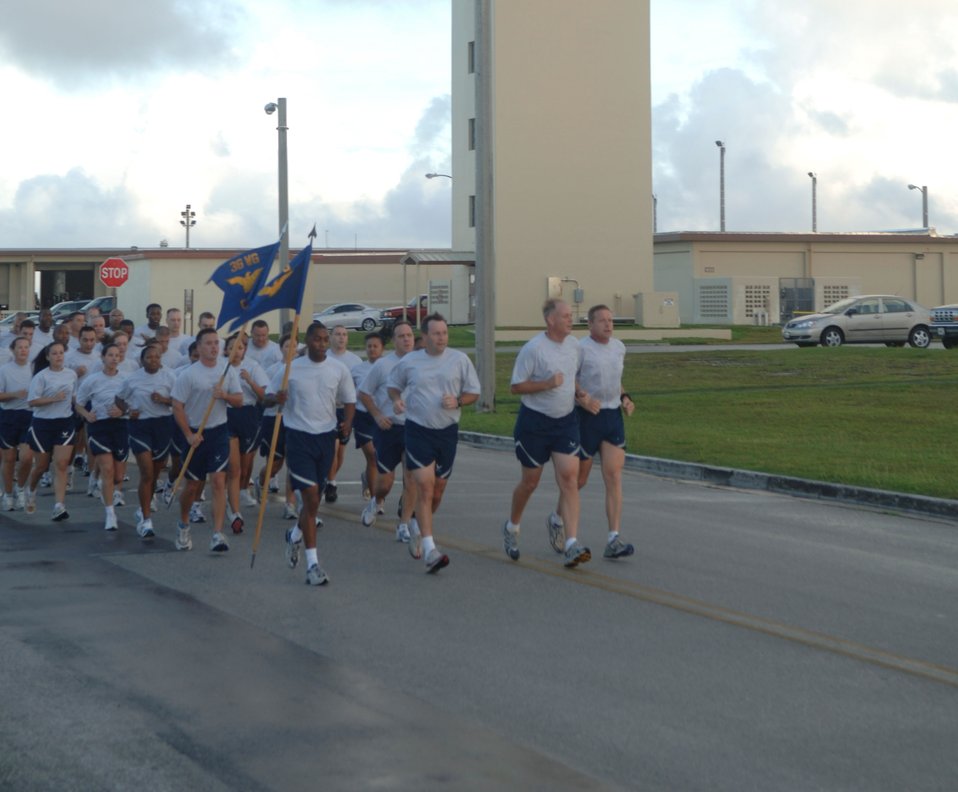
Wing run

Wing leadership leads Team Andersen members on a wing run Nov. 21 to kick off Wingman Day.